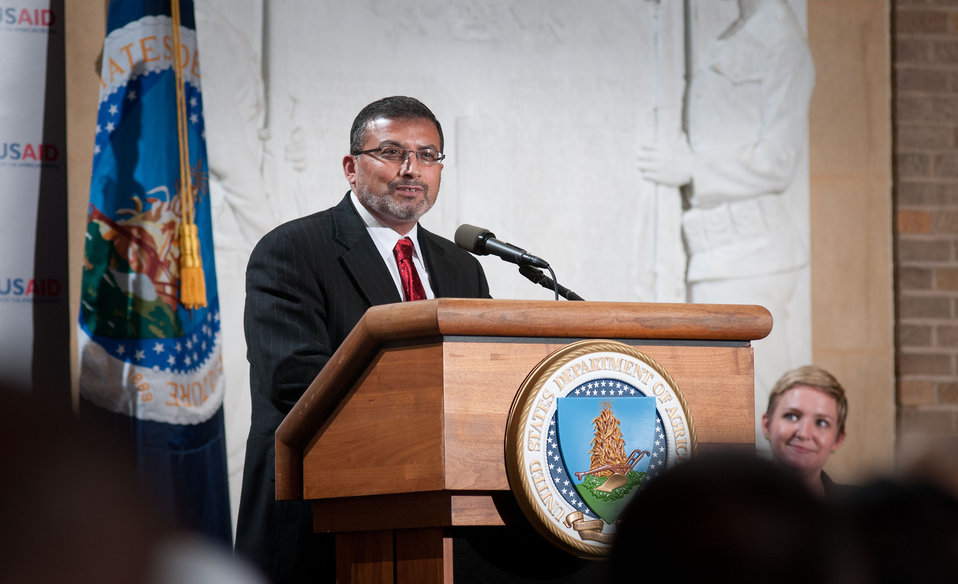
Islamic Relief USA CEO Abed Ayoub presents the reflection during the Iftar event, co-sponsored by the Iftar celebration, co-sponsored by the U.S. Department of Agriculture, U.S. Agency for International Development (USAID) and Islamic Relief USA, on Tuesday, August 7, 2012, in the USDA Whitten Building, in Washington, D.C. Ramadan is the month of fasting, intensive prayer, sacrifice and worship for Muslims around the world. Throughout this month, Muslims fast during the day, abstaining from consuming food from dawn to dusk and using this time to purify spiritually. Fasting reminds Muslims of the poverty and hunger suffered by many in the United States and worldwide. It is a connection with those who are hungry not through devotion, but through the many global factors that lead to hunger and famine. Iftar is the meal at which Muslims break their fast at sunset, usually by eating dates, according to the Prophetic tradition.